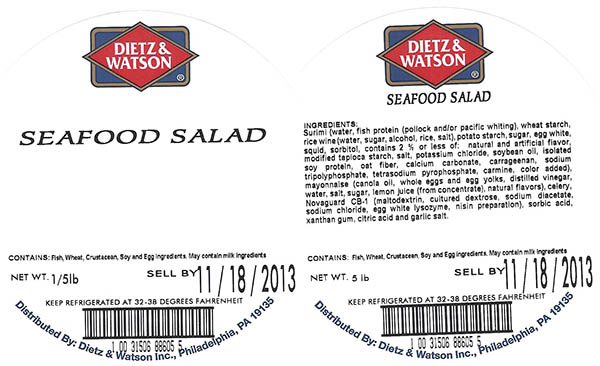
RECALLED – Prepared salads

October 24, 2013 – Product Recall – Boston Salads and Prepared Foods Recalling Ready-To-Eat Products Because of Possible Health Risk.